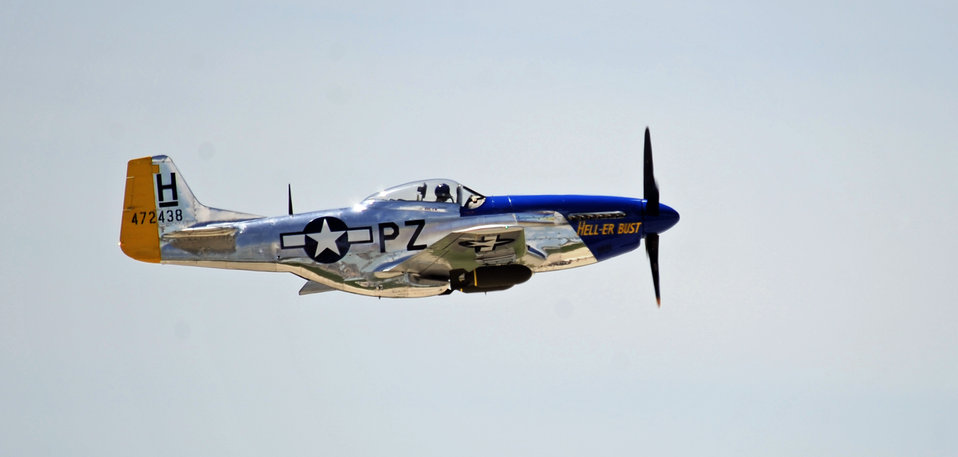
2011 Dakota Thunder air show

A P-51 Mustang flies June 4, 2011, during the 2011 Dakota Thunder air show at Ellsworth Air Force Base, S.D.